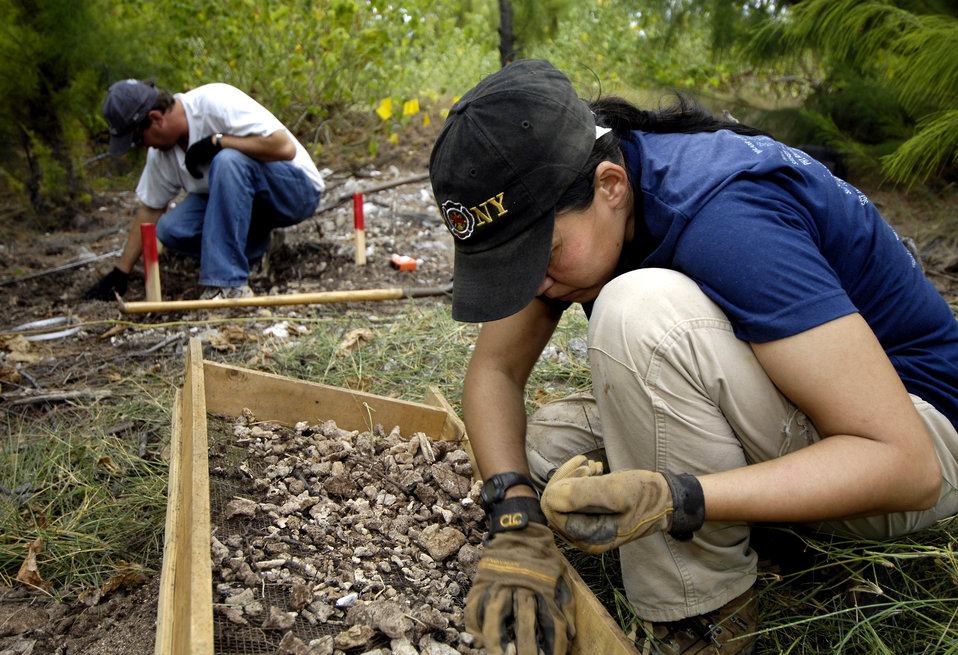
Servicemembers search for POW/MIAs on Wake Island

Greg Berg and Denise To excavate a dig site Jan. 12, 2008 on Wake Island. Mr. Greg and Ms. To, forensic anthropologists, were sent to do a site survey after Wake Island officials notified the Joint POW/MIA Accounting Command of bones located on the island. JPAC officials are charged with achieving the fullest possible accounting of all Americans missing as a result of past conflicts.